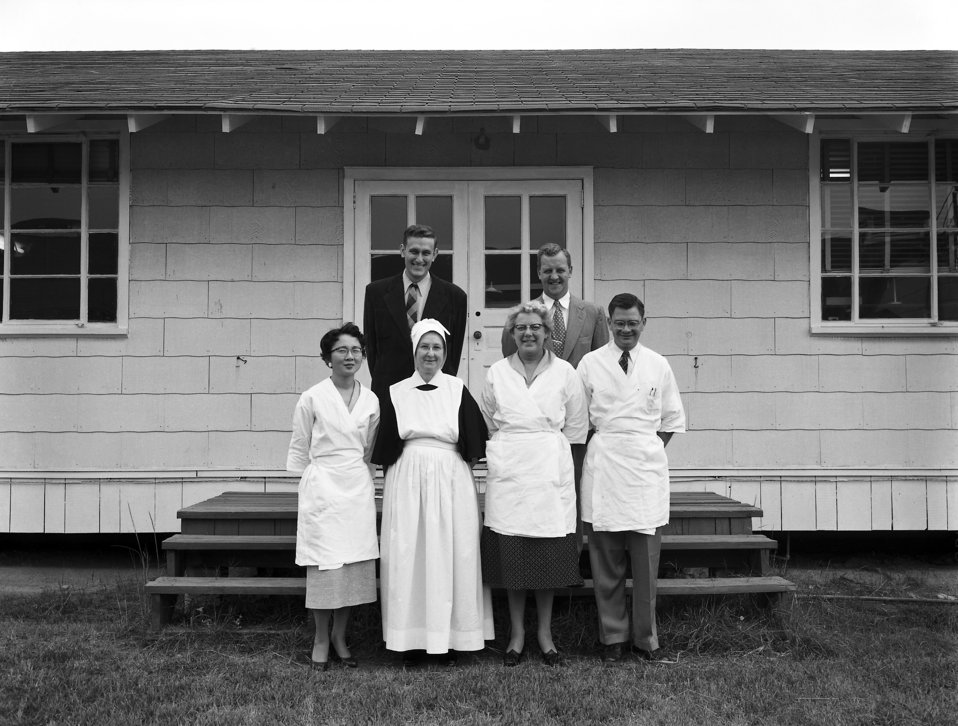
This is a photograph of the CDC, "Serology of Syphilis", class members of 1955.